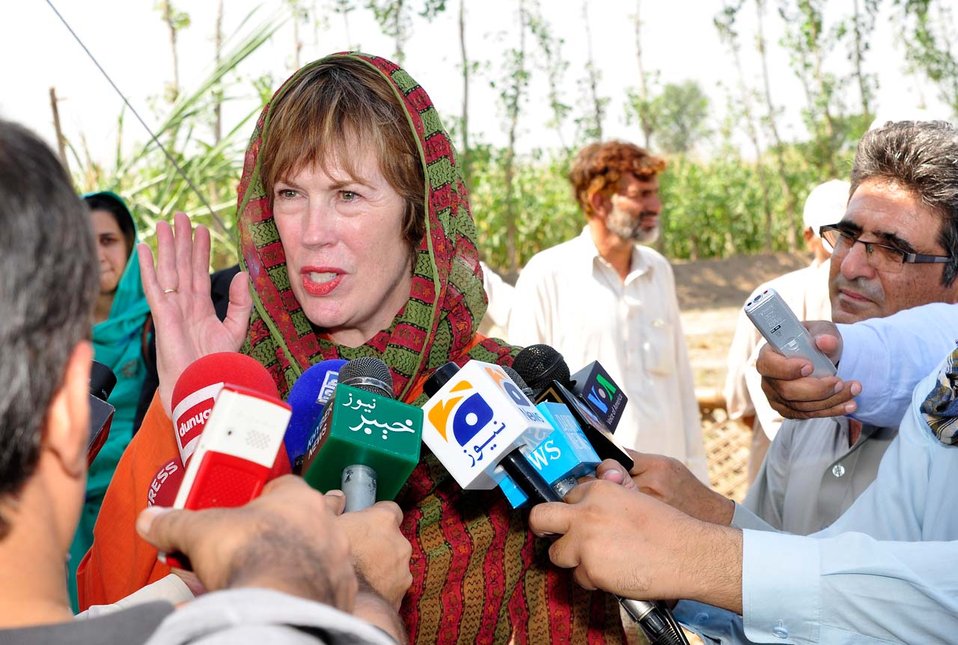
Dr. Marilyn Wyatt's Visit to the Flood-affected Farming Communities in Khyber Pakhtunkhwa